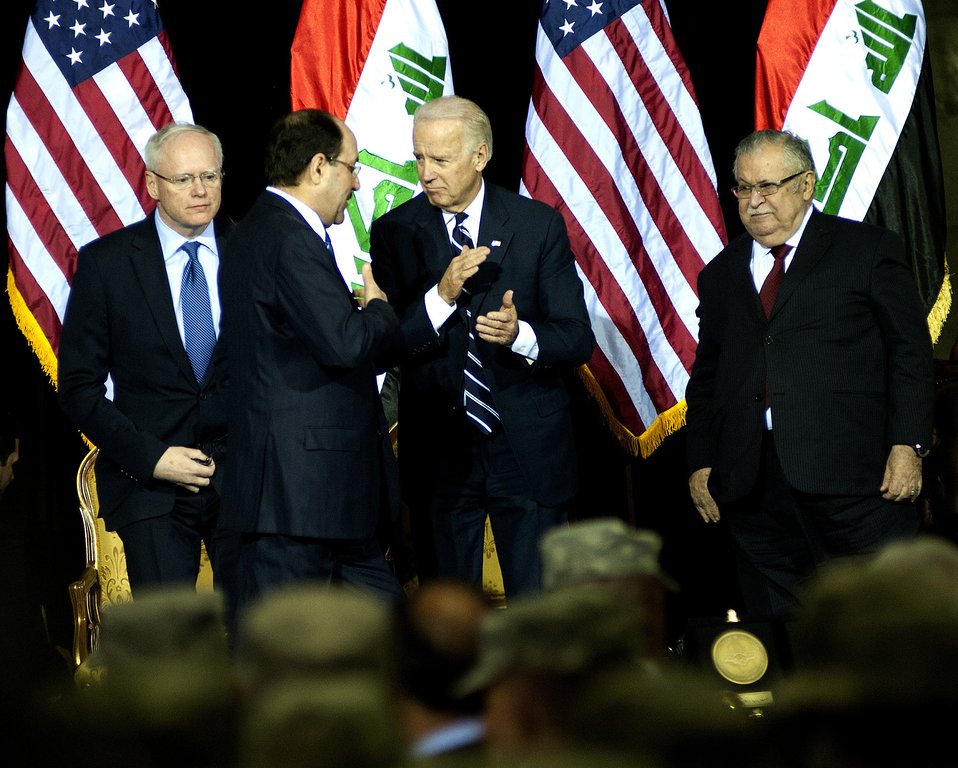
Biden, al-Maliki honor troops' sacrifices during Day of Commitment Ceremony

Iraqi Prime Minister Nouri al-Maliki (center left) talks to U.S. Vice President Joe Biden after giving his speech during the Government of Iraq Day of Commitment Ceremony in the Al Faw Palace at Victory Base Complex, Iraq, Dec. 1, 2011. Ambassador to Iraq James F. Jeffrey is on the left and Iraqi President Jalal Talabani is on the right. The ceremony commemorated the sacrifices and accomplishments of U.S. and Iraqi service members.